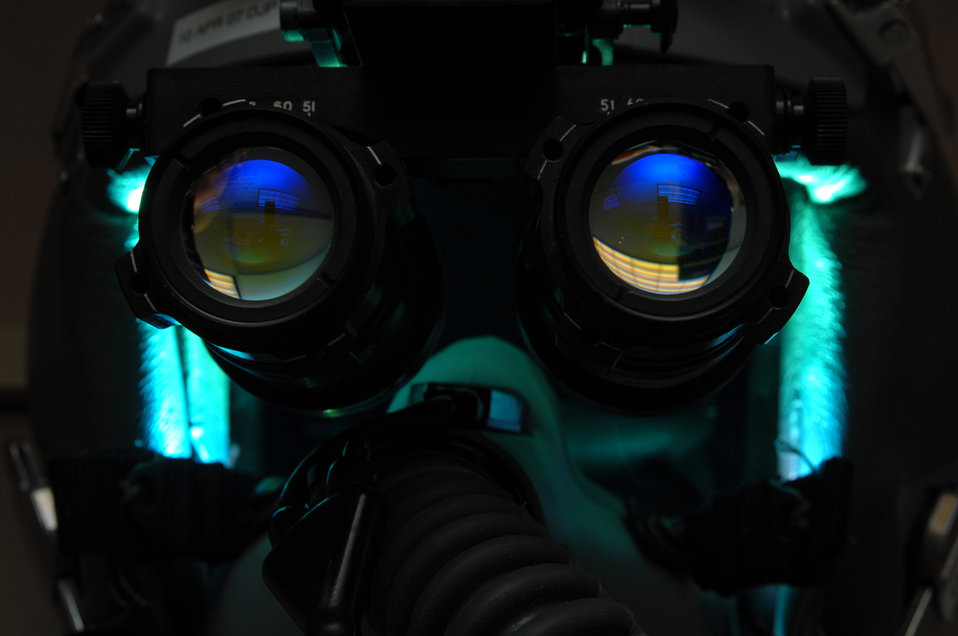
Seeing in the dark

AS/AVS-9 Night Vision Goggles sit atop a fighter pilot's helmet in the life support section of the 355th Fighter Squadron Nov. 29 at Eielson Air Force Base, Alaska. During the winter months, pilots of Eielson AFB are given a greater opportunity to train with NVG's more than their counterparts in the lower 48 states due to the decreased length of sunlight.